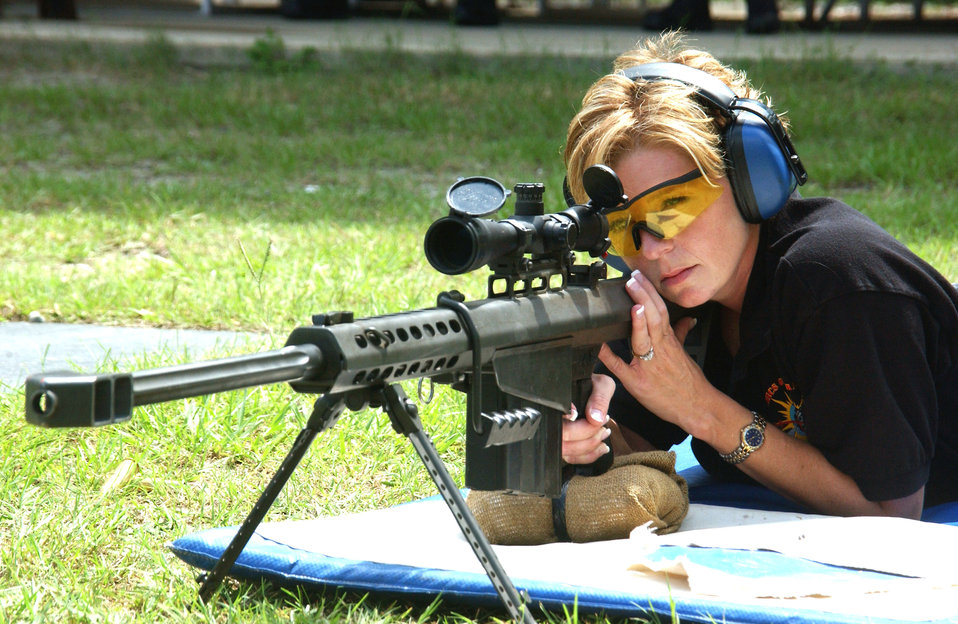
Dynamics of terrorism

Master Sgt. Tanya Breed sights in a Barrett .50 caliber sniper rifle during training at Hurlburt Field, Fla. Sergeant Breed demonstrated sniper capabilities for students at the U.S. Air Force Special Operations School's Dynamics of International Terrorism course.